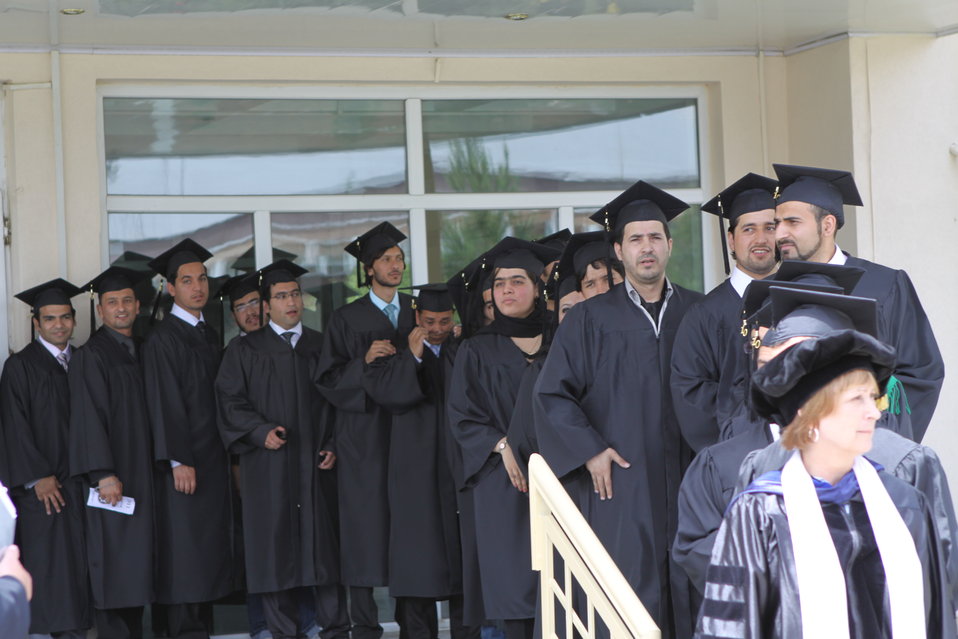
100526 AUAF Graduation 092